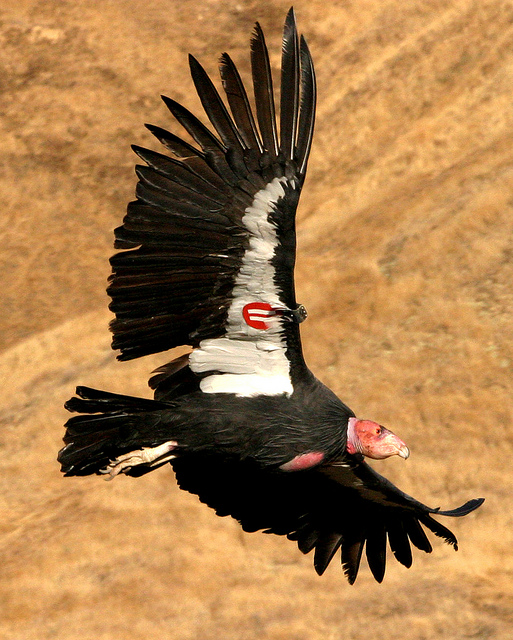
California condor bitter creek usfws

Bitter Creek National Wildlife Refuge, CA